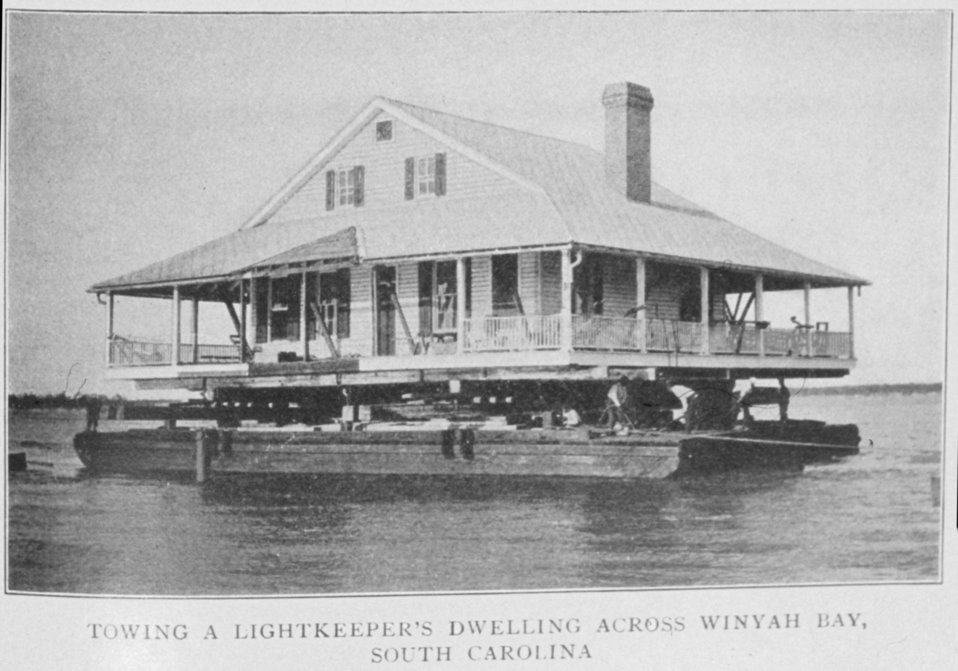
Towing a Lightkeeper's Dwelling across Winyah Bay, South Carolina. In: 'Lighthouses and Lightships of the United States' by George R. Putnam, p. 96, 1917. Houghton Mifflin and Company, Boston. Library Call No. 527.7 P98.